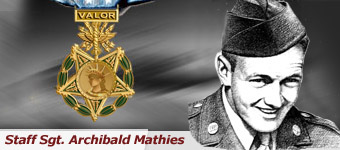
Staff Sgt. Archibald Mathies was one of four enlisted people to receive the nation's highest military honor during World War II.After a bombing mission, he attempted to land a disabled aircraft with the navigator to save a badly wounded pilot who could not bail out; they all died on the third unsuccessful try. His unselfish actions and ultimate sacrifice earned him the Medal of Honor posthumously.